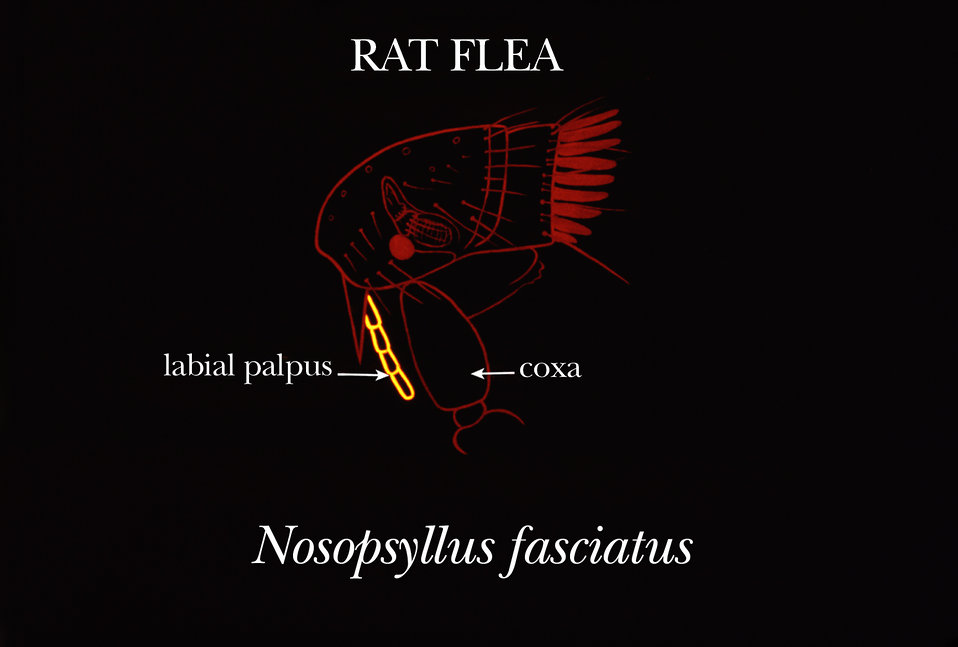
This illustration reveals an identifying characteristic of the 'rat flea's', Nosopsyllus fasciatus, head region.